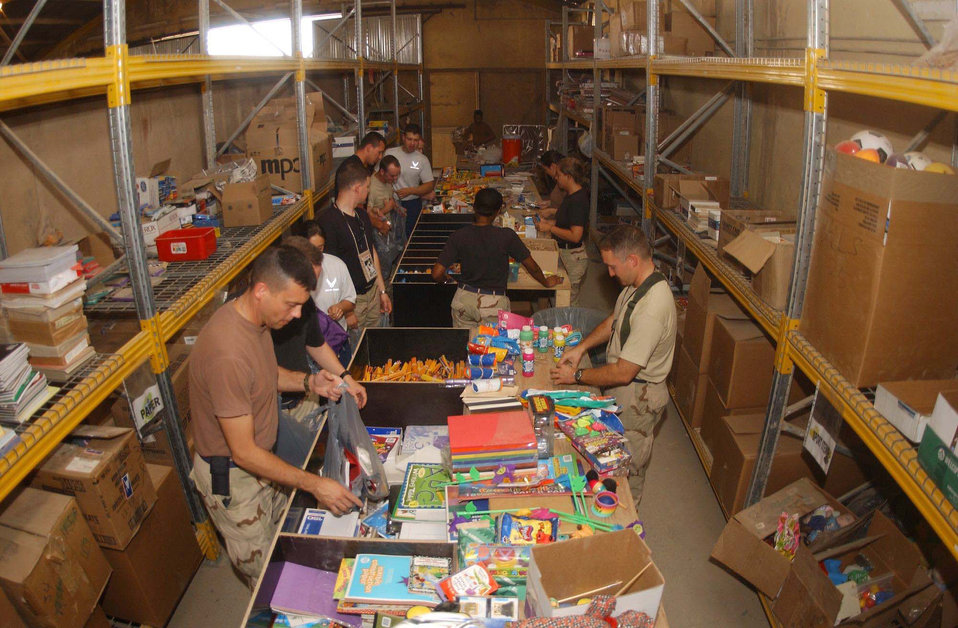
Operation School Supplies

Airmen at Kirkuk Air Base, Iraq, assemble school supply packets with pencils, markers, paper, toys and more. More than 65 volunteers assembled about 9,000 school supply packets for delivery to local schools.